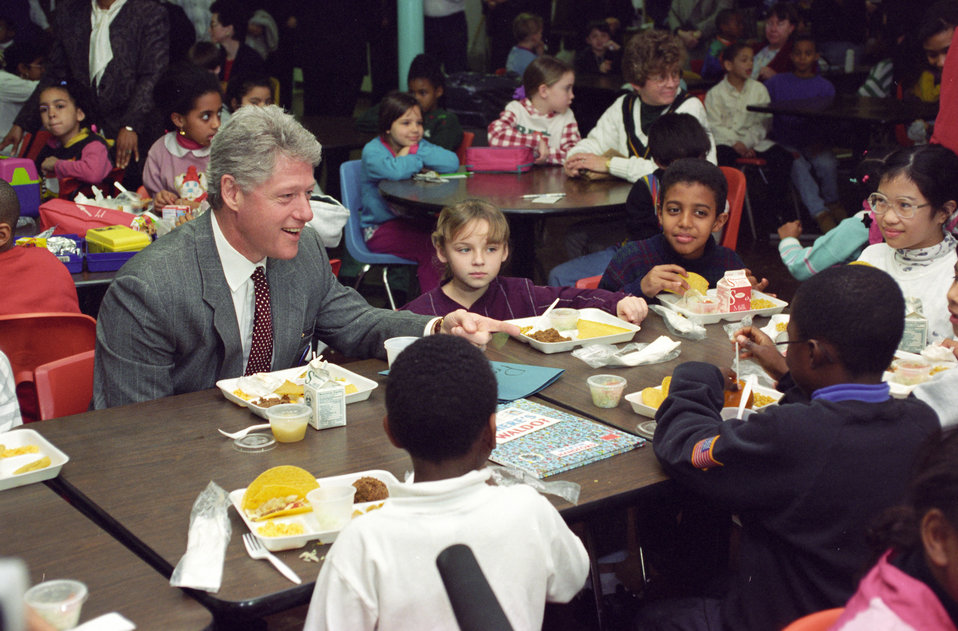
President Bill Clinton enjoys a school lunch at Patrick Henry Elementary School in Alexandria, VA on March 9, 1995. The National School Lunch Program (NSLP) is a federally assisted meal program operating in public and nonprofit private schools and residential childcare institutions through the U.S. Department of Agriculture’s (USDA) Food Nutrition Service (FNS). The program provides nutritionally balanced, low-cost or free lunches to children each school day. The program was established under the National School Lunch Act, signed by President Harry Truman in 1946.